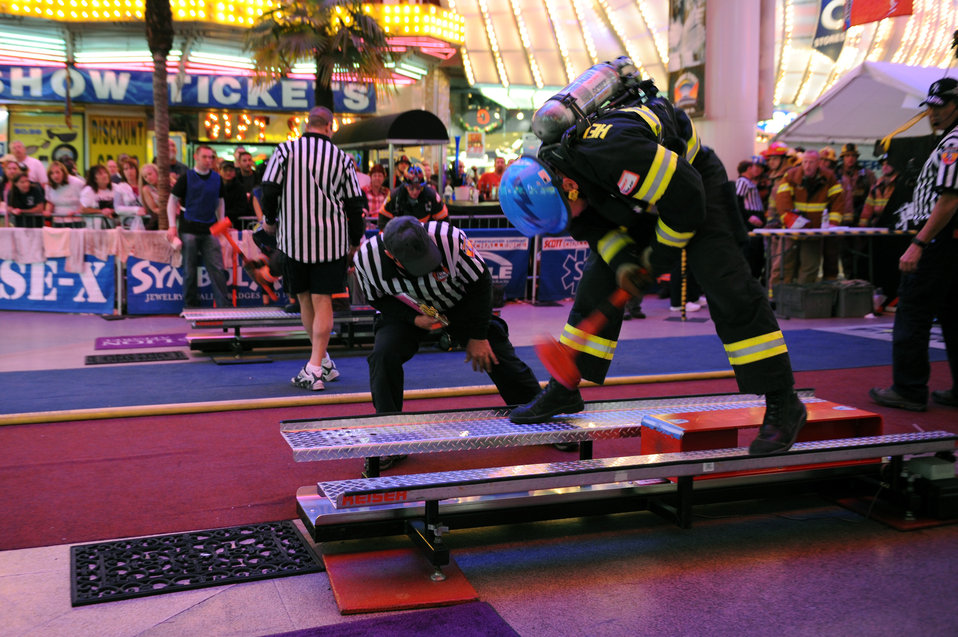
AFA Firefighters

Ken Helgerson uses a sledgehammer to a sled assimilating cutting open a roof as he competes in the team relay event Nov. 20, 2009, at the Scott Firefighter Combat Challenge in Las Vegas. Mr. Helgerson is a firefighter at the Air Force Academy in Colorado Springs, Colo.